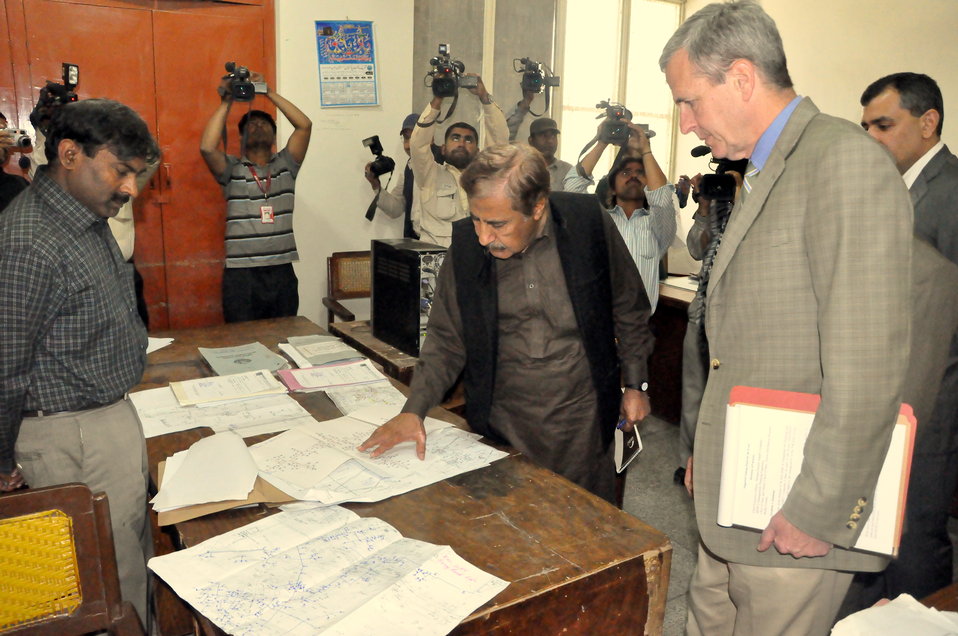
USAID equips MEPCO with state-of-the-art Planning and Engineering Computer Center

USAID Pakistan Mission Director, Jonathan Conly reviewing obsolete planning & engineering mechanisms with MEPCO CEO.